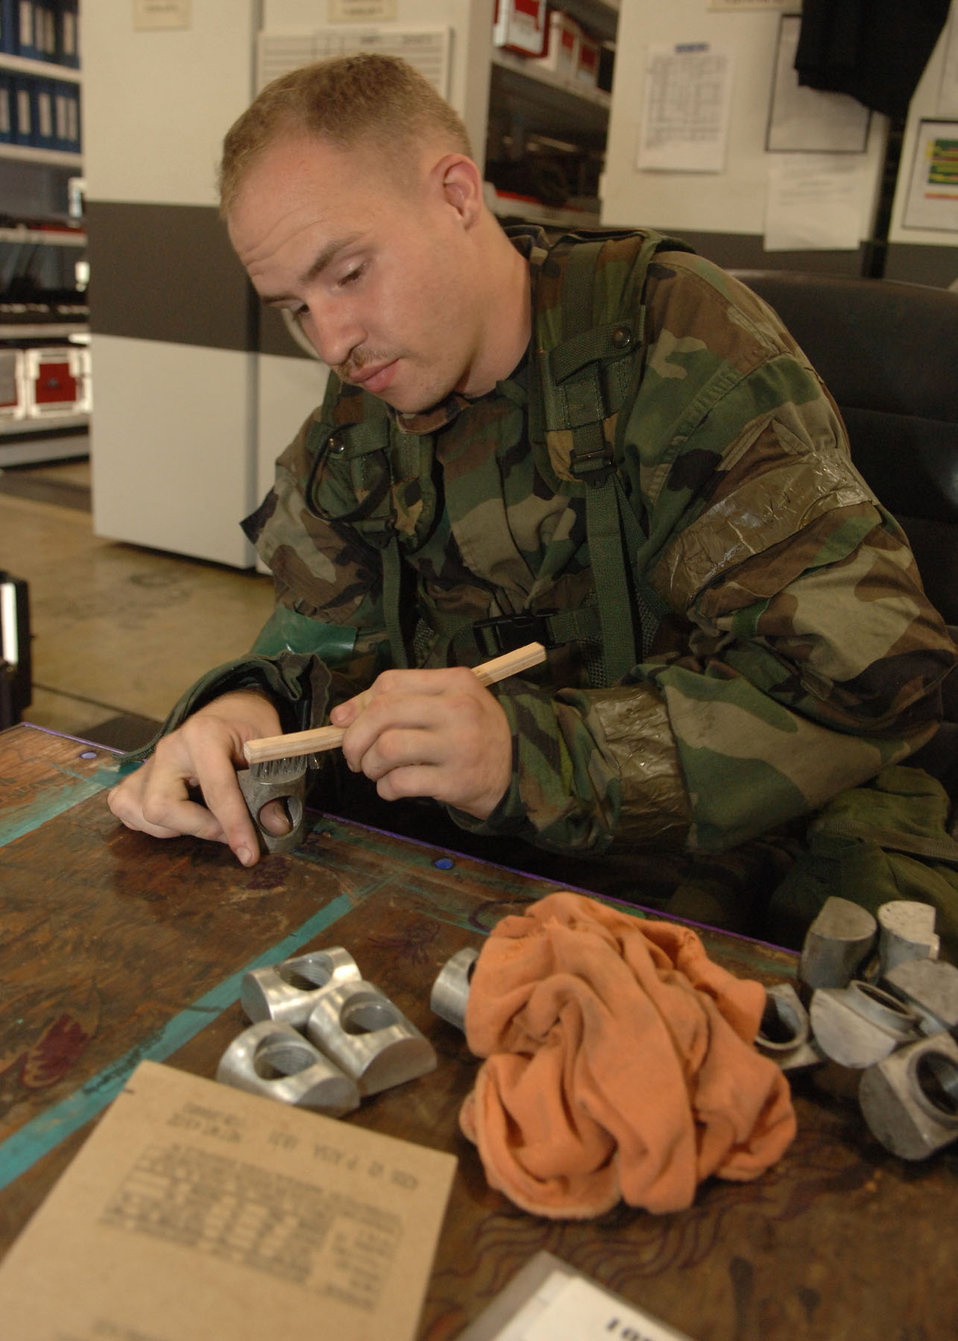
Practicing to stay safe

Airman Basic Mathew Fugua performs a daily work routine while in mission-oriented protective posture 2 at Yokota Air Base, Japan, during a 374th Air Wing exercise. MOPP levels relate to chemical or biological hazards. Airman Fugua is with the 374th Maintenance Squadron.